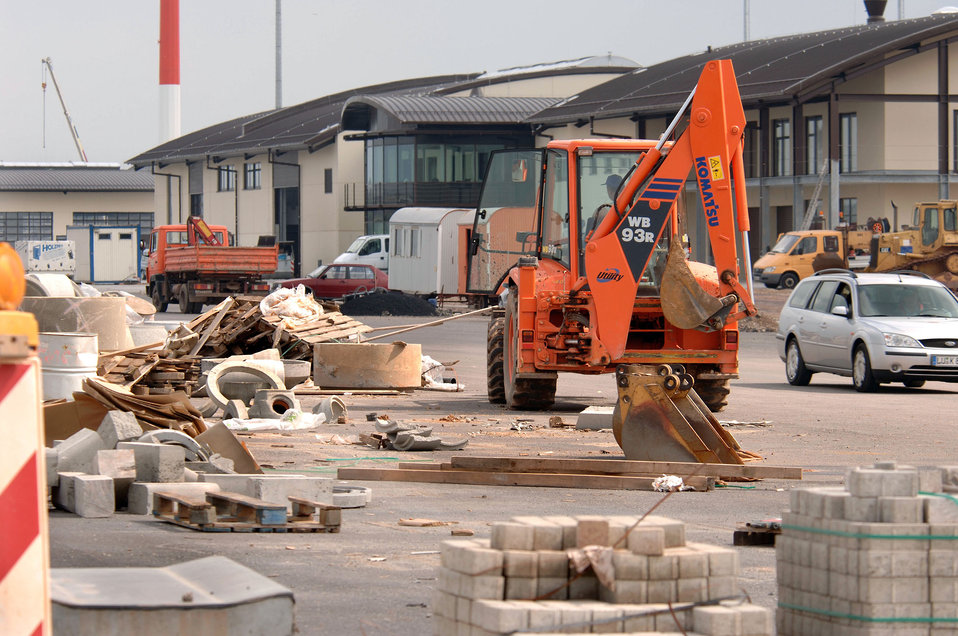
Spangdahlem's new airlift mission has room for expansion

SPANGDAHLEM AIR BASE, Germany -- With about six weeks before the 726th Air Mobility Squadron starts airlift operations here, construction continues on its operations center. The unit's move coincides with the moving of airlift operations from nearby Rhein-Main Air Base as part of the Rhein-Main Transition Program. Another part of the Rhein-Main mission will move to nearby Ramstein Air Base.